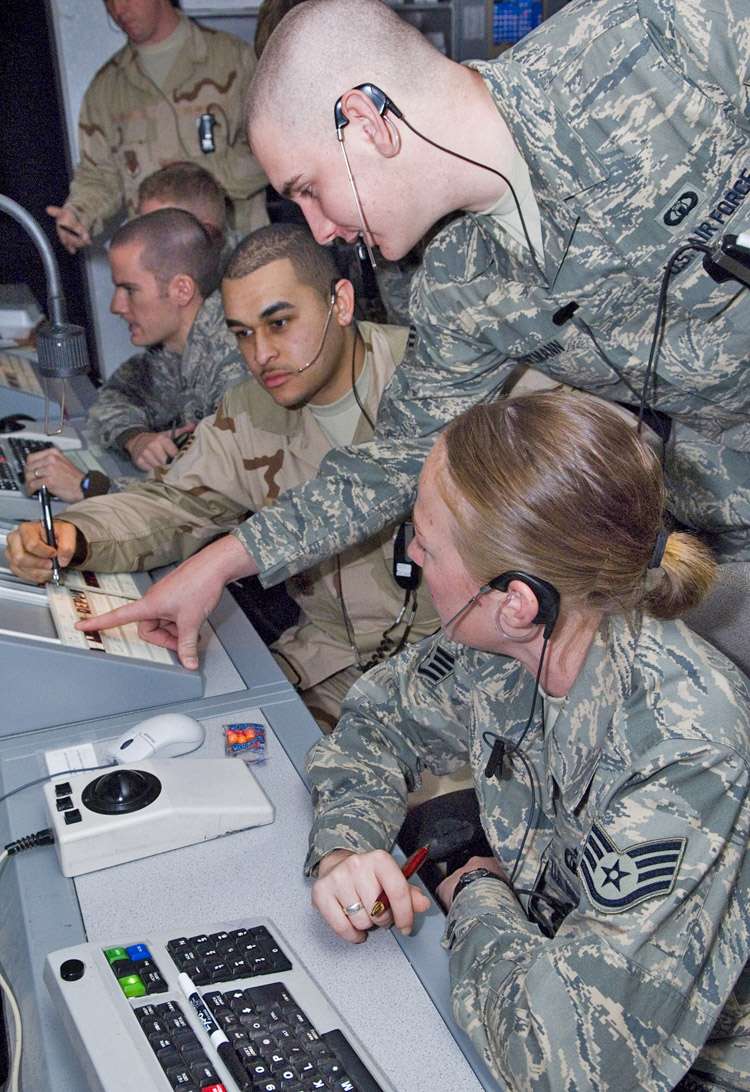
Balad radar air traffic controllers run skies of Iraq

Senior Airman Aaron Portman, working in the flight data position at Balad Air Base, Iraq, points out the altitude at which an inbound aircraft will be traveling to Senior Airman David Daniel, (seated), and Staff Sgt. Elizabeth Deem. All are 332nd Expeditionary Operations Support Squadron air traffic controllers. Airman Daniel and Sergeant Deem are working as approach control assistants. Airman Daniel is deployed from Royal Air Force Lakenheath, England; Airman Portman is a from Dover Air Force Base, Del.; and Sergeant Deem is deployed from Vance AFB, Okla.